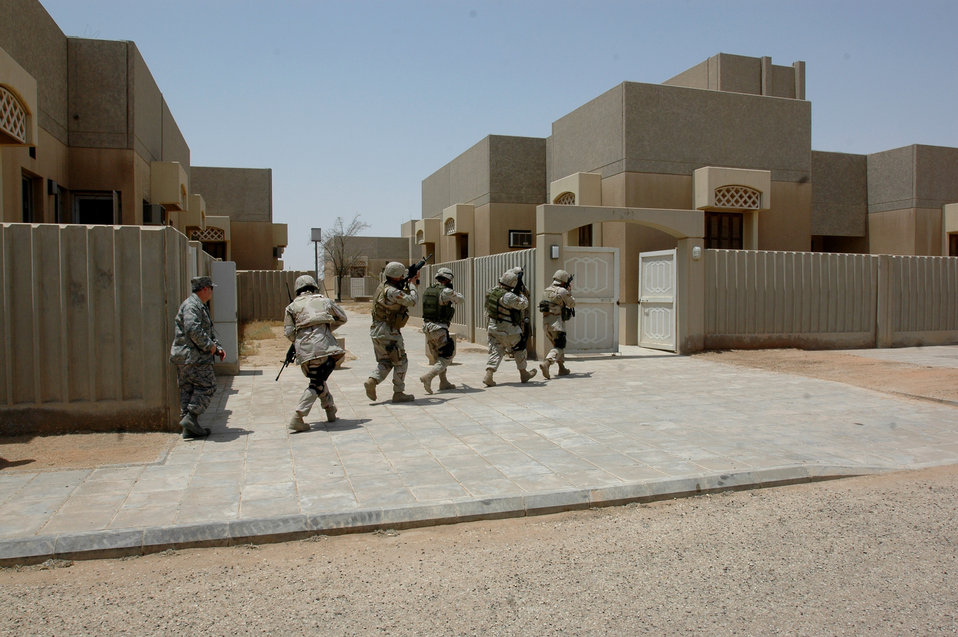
'300' Airmen provide world-class base defense

Brig. Gen. Charles W. Lyon (left) follows Airmen with the 64th Air Expeditionary Group as they storm a building during a base defense demonstration Aug. 20 at a forward deployed location in Southwest Asia. General Lyon is the 379th Air Expeditionary Wing commander.